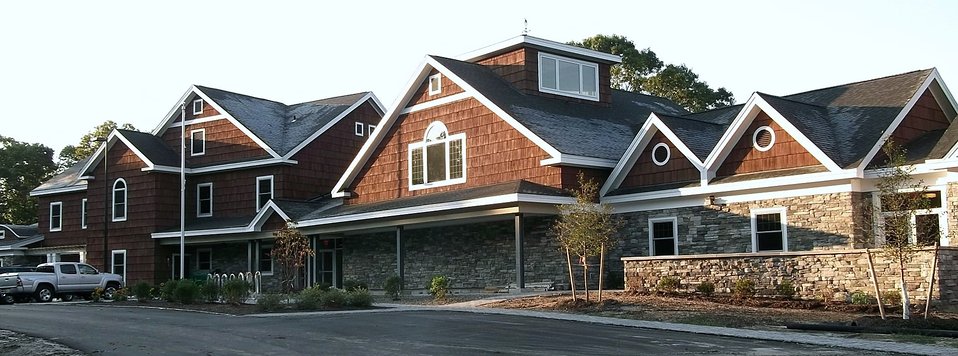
Front of Visitor Center Building

Front view of recently completed Long Island National Wildlife Refuge Complex & Headquarters building.